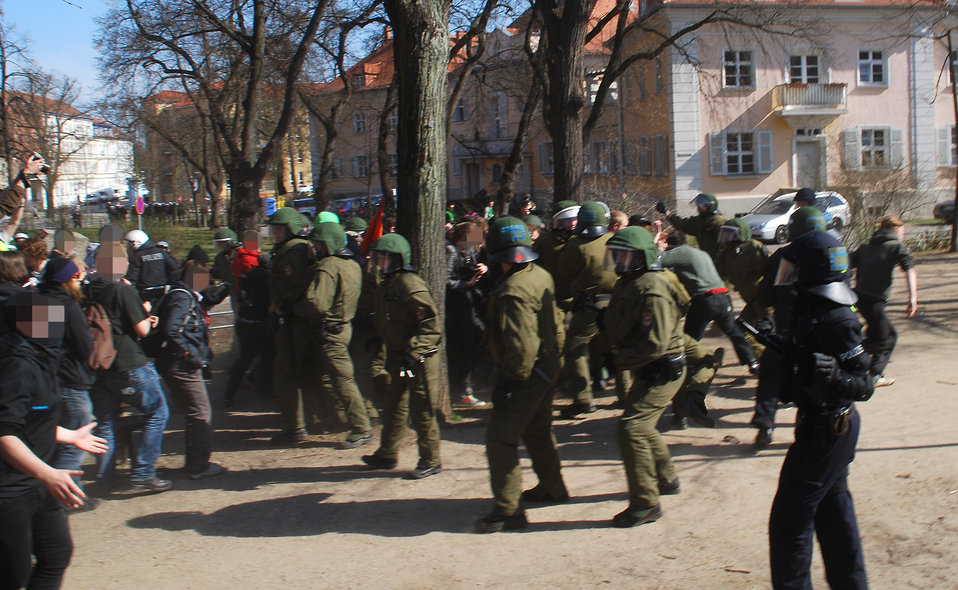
Proteste gegen den Nazi-Aufmarsch am 24.3.2012 in Frankfurt (Oder)